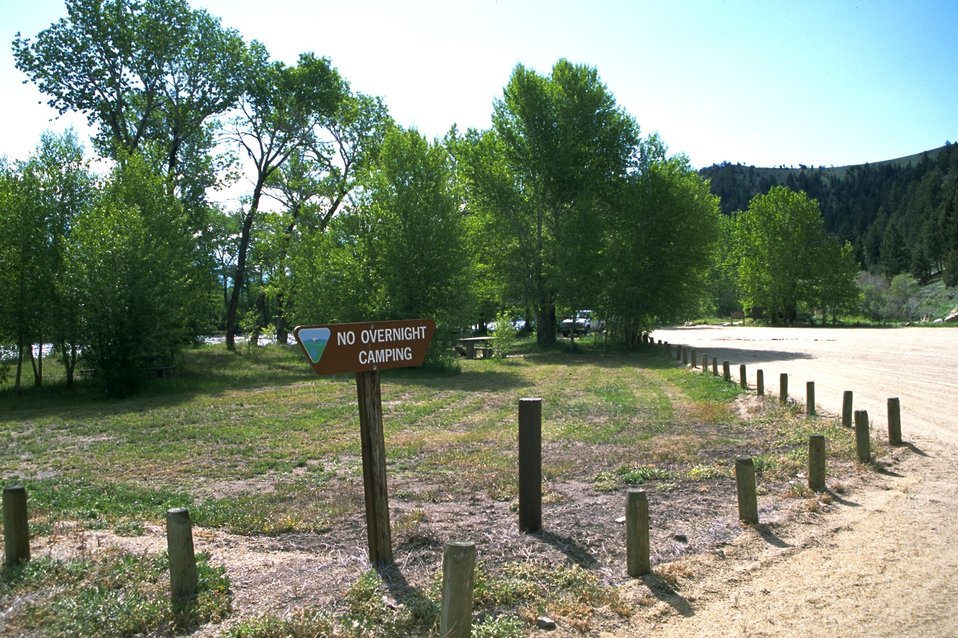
Sign at the Divide Day Use Area picnic area